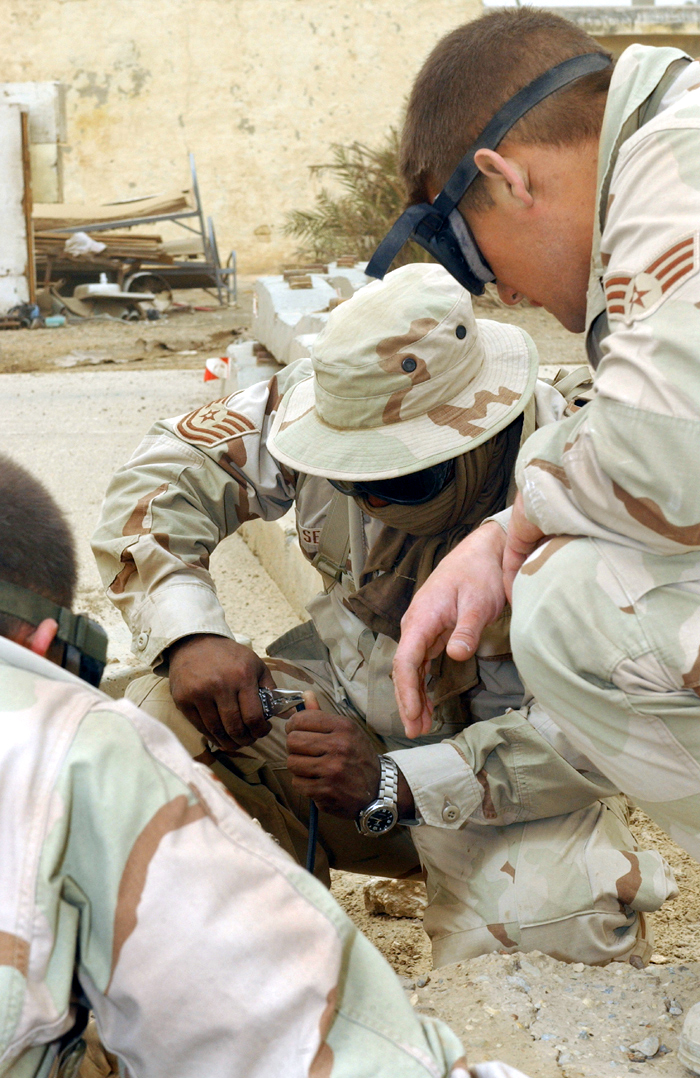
Setting up lines of communication

OPERATION IRAQI FREEDOM -- Tech. Sgt. Rick Seward inspects old communications cable at Tallil Air Base in southern Iraq with help from Tech. Sgt. Denny Tankersley (left) and Senior Airman Steven Griffith. They are deployed to Tallil from the 5th Combat Communications Group at Robins Air Force Base, Ga.